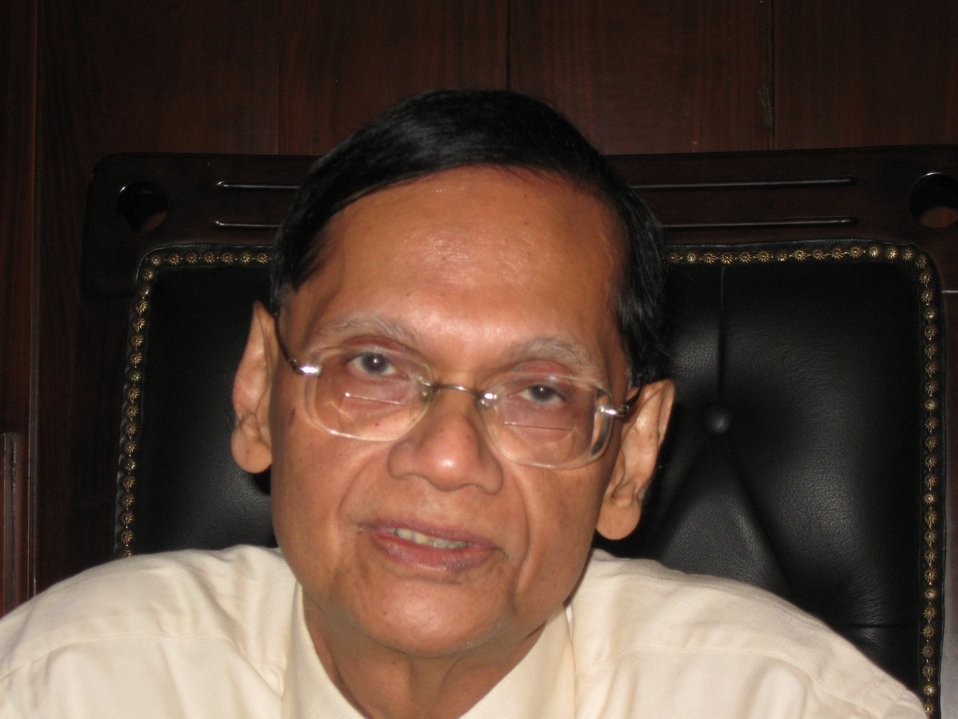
Professor G. L. Peiris's Photograph